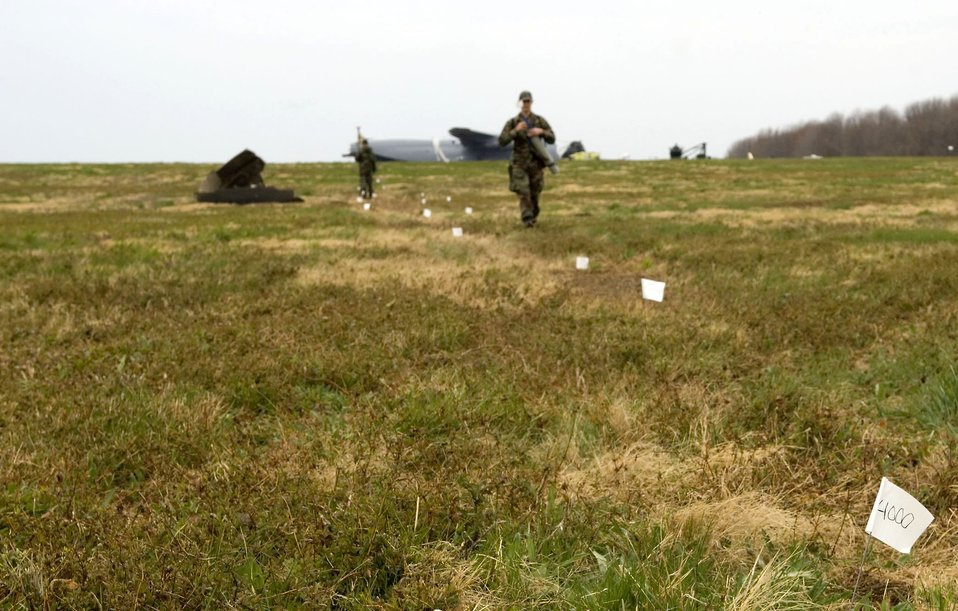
C5 crash site:debris field GPS marking

A member of the 436th Civil Engineer Squadron mishap survey team marks debris at Dover Air Force Base, Del., on Friday, April 7, 2006. The C-5 Galaxy in the background crashed at the base April 3.